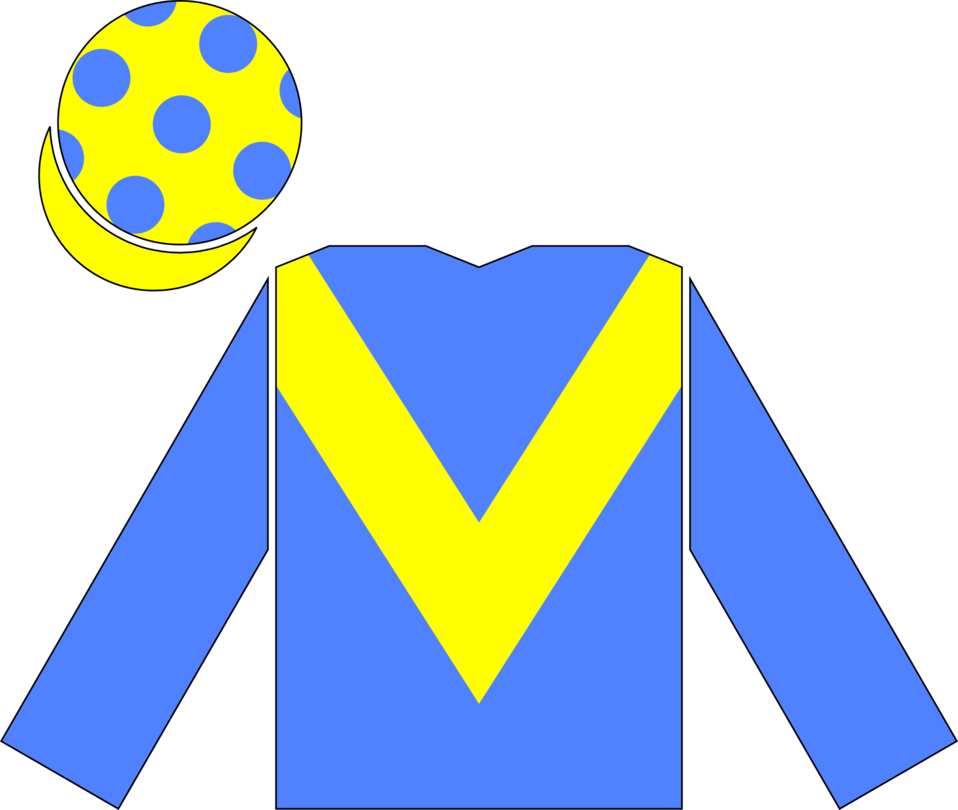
The en:racing silks of Saeed Suhail, as worn by the jockey of en:Kris Kin to victory in the en:2003 Epsom Derby.